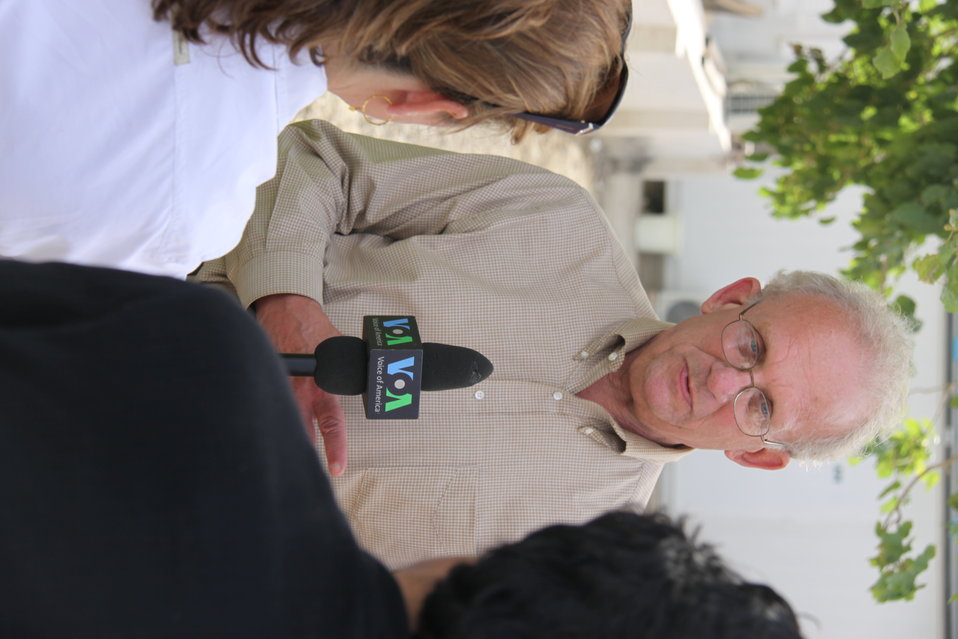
Meeting with Local Leaders in Kandahar